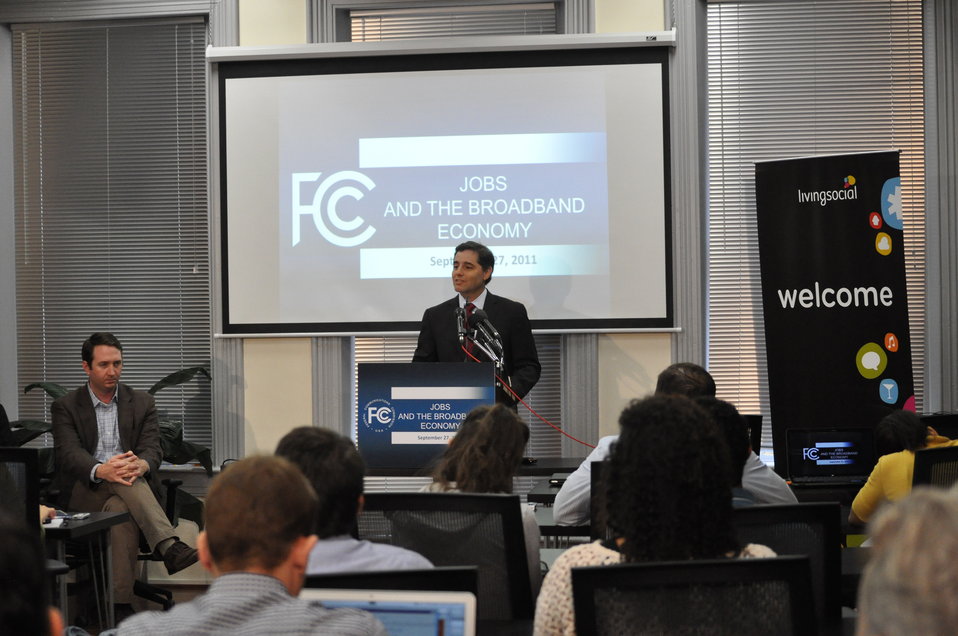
Jobs and the Broadband Economy

FCC Chairman Genachowski